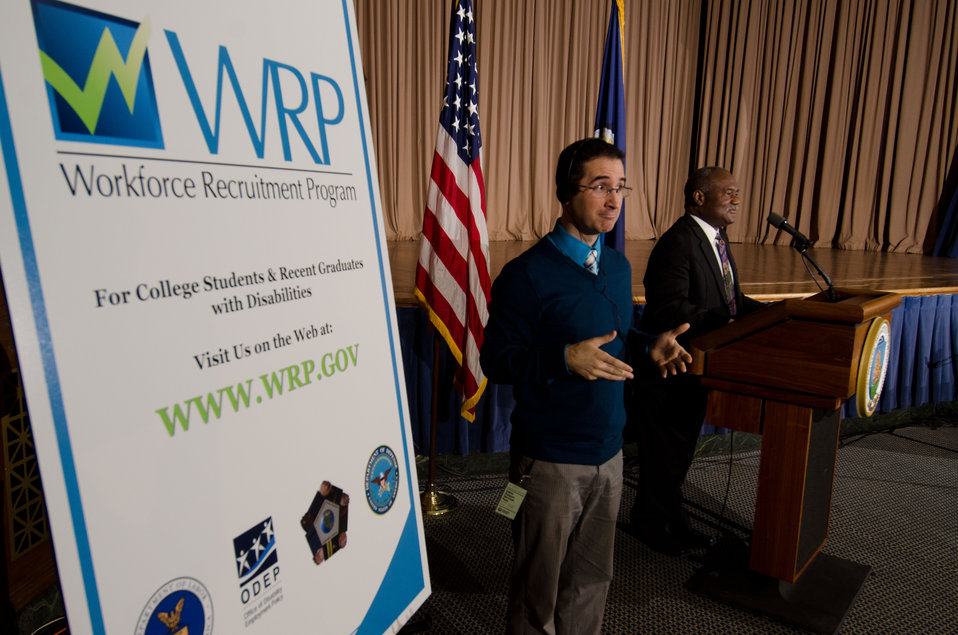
American sign language interpreter B.J. Kamerer (left) communicated to the hearing impaired during Kareem Dale (right), Special Assistant to the President on Disability Policy speech at the Work Force Recruitment Program’s (WRP) “Your Key To Hiring Student Interns and Employees with Disabilities” event hosted by the United States Department of Agriculture (USDA) at the Jefferson Auditorium, in Washington, D.C. on Tuesday, February 7, 2012.